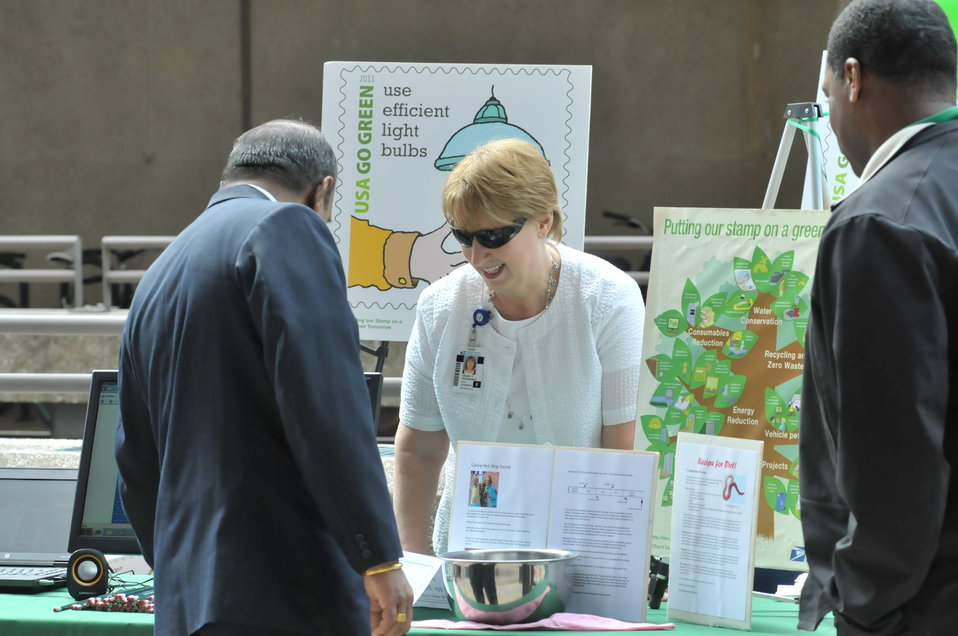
U.S Postal Services introduces a new Global: Sea Surface temperatures forever stamp at the Earth Day program at Department of Energy on April 22, 2014.